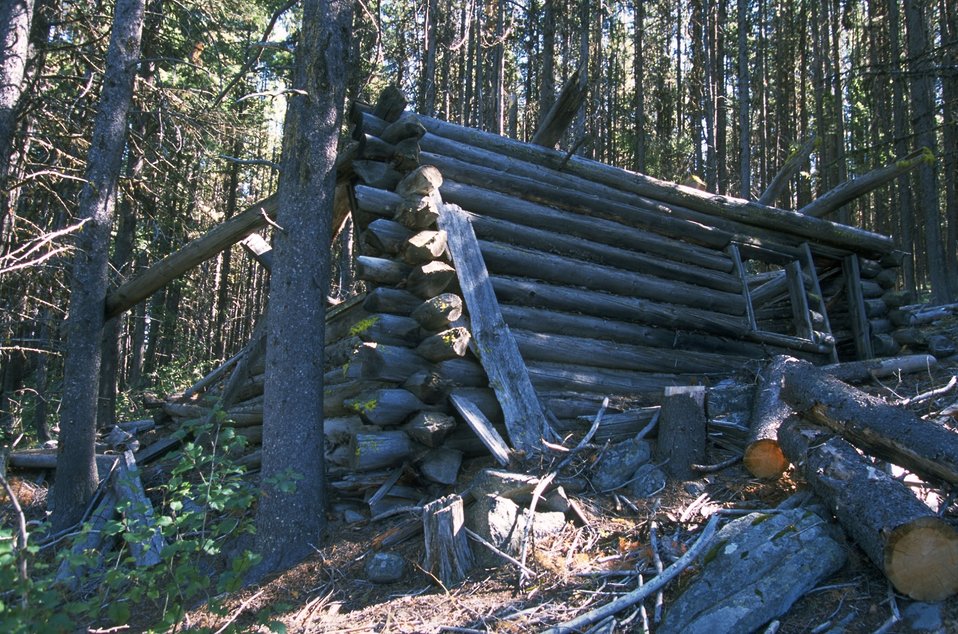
Historic cabin in Coloma Ghost Town